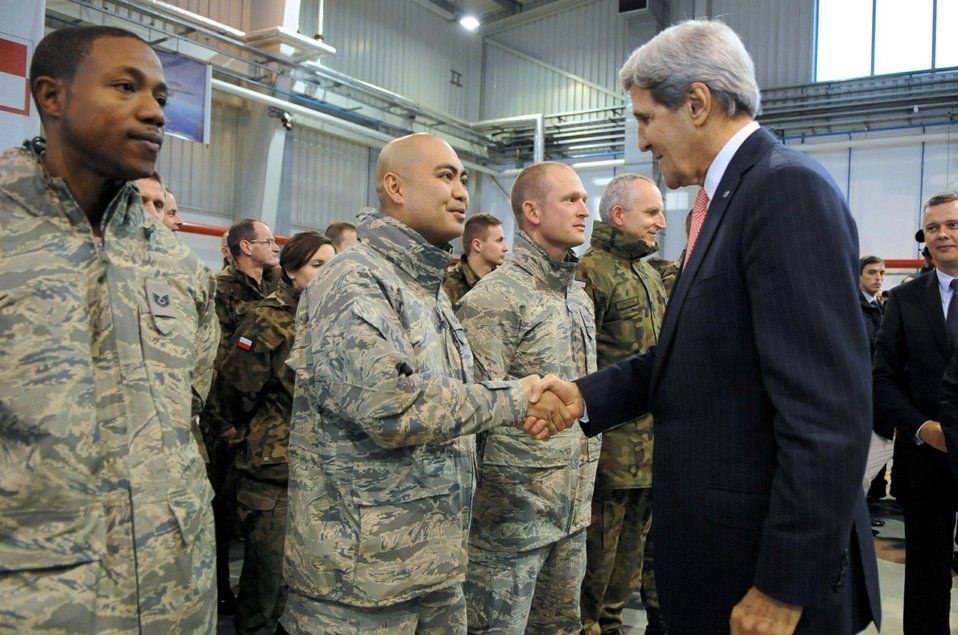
Secretary Kerry Greets a U.S. Air Force Member in Poland

U.S. Secretary of State John Kerry greets a member of the U.S. Air Force who lives and works in conjunction with the Polish military during a visit to the Lask Military Airbase in Poland on November 5, 2013.